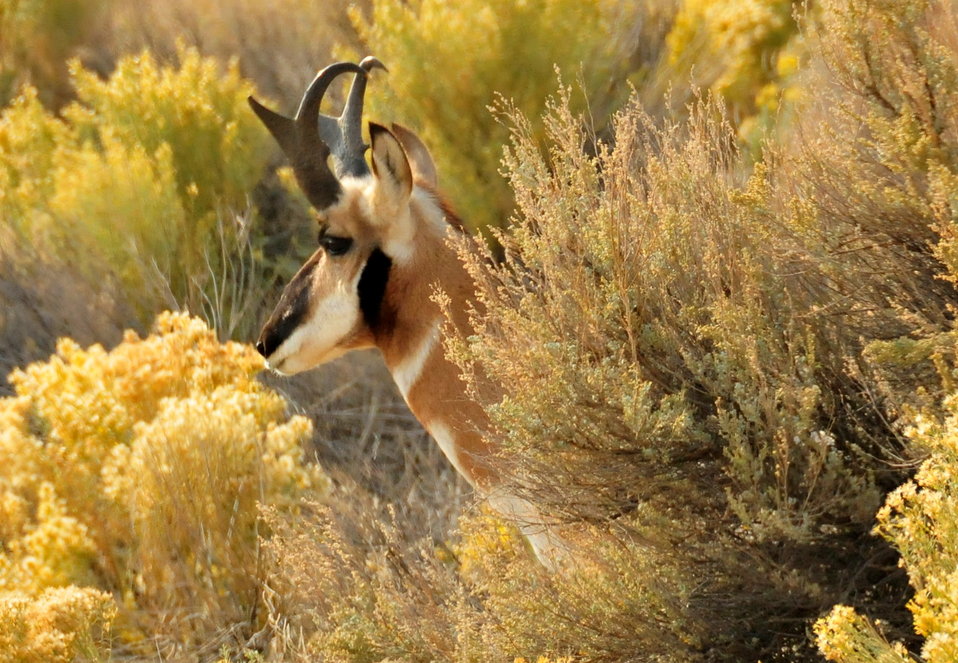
Pronghorn Buck Seedskadee NWR 6